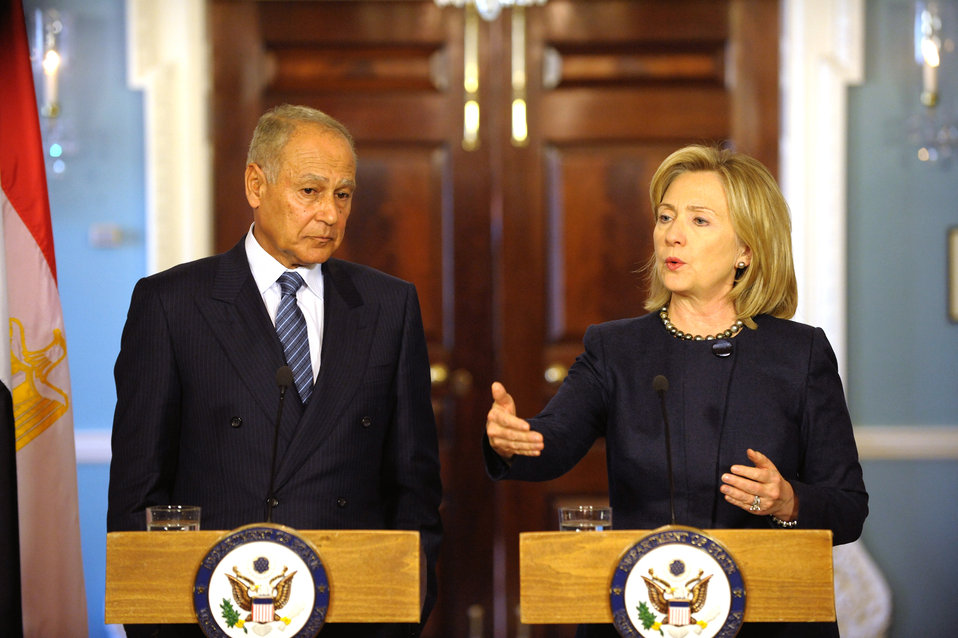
Secretary Clinton Holds a Bilateral Meeting With Egyptian Foreign Minister Gheit

U.S. Secretary of State Hillary Rodham Clinton holds a bilateral meeting with Egyptian Foreign Minister Aboul Gheit at the U.S. Department of State in Washington, D.C., on November 10, 2010.